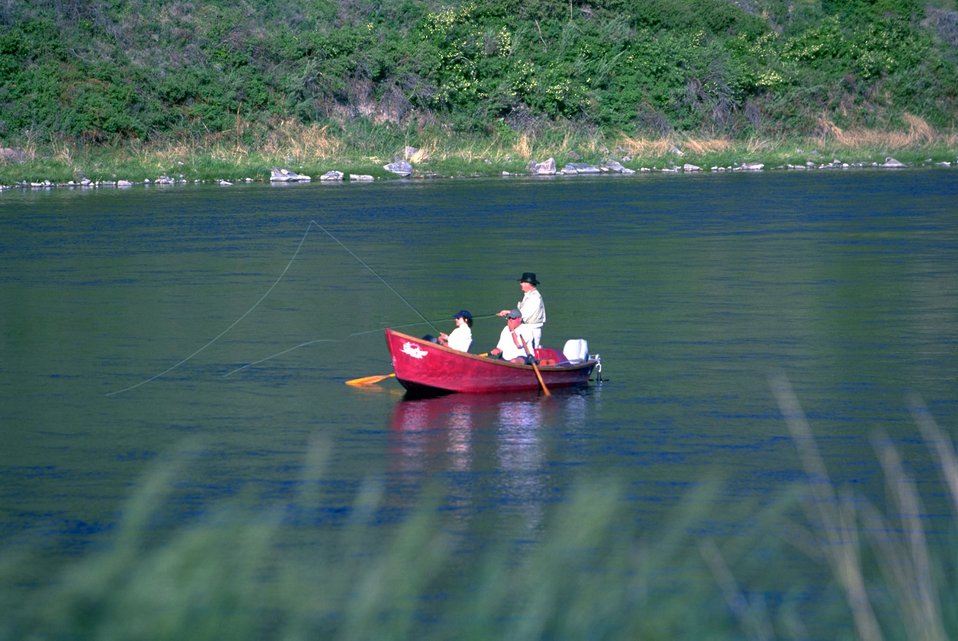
Fishing on the Missouri